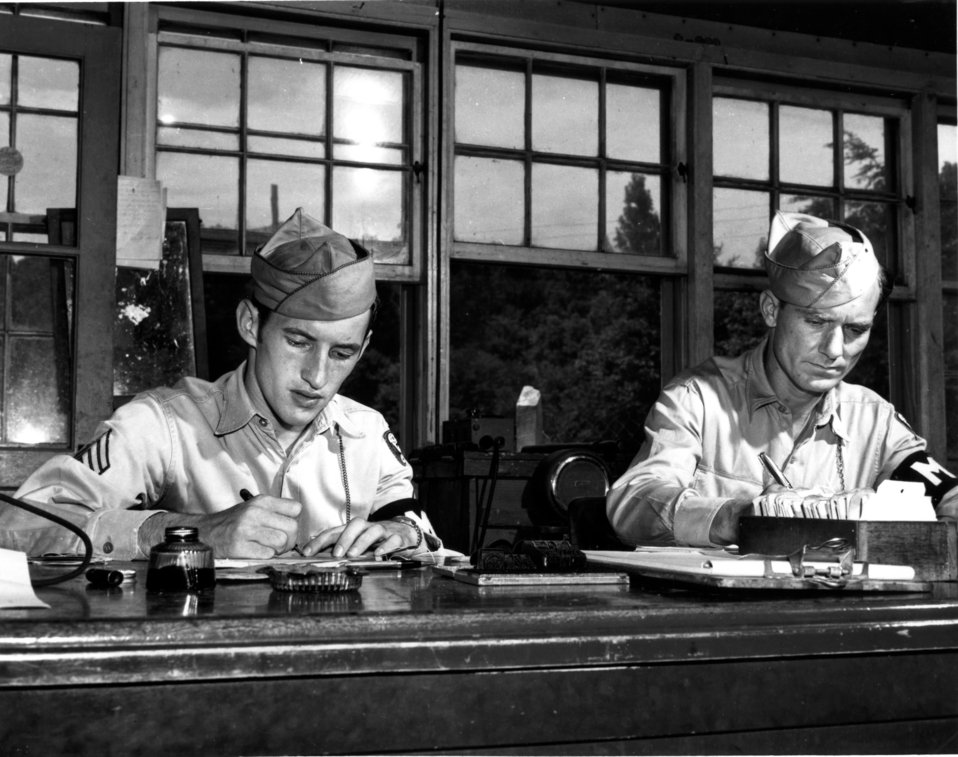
Security at Oak Ridge